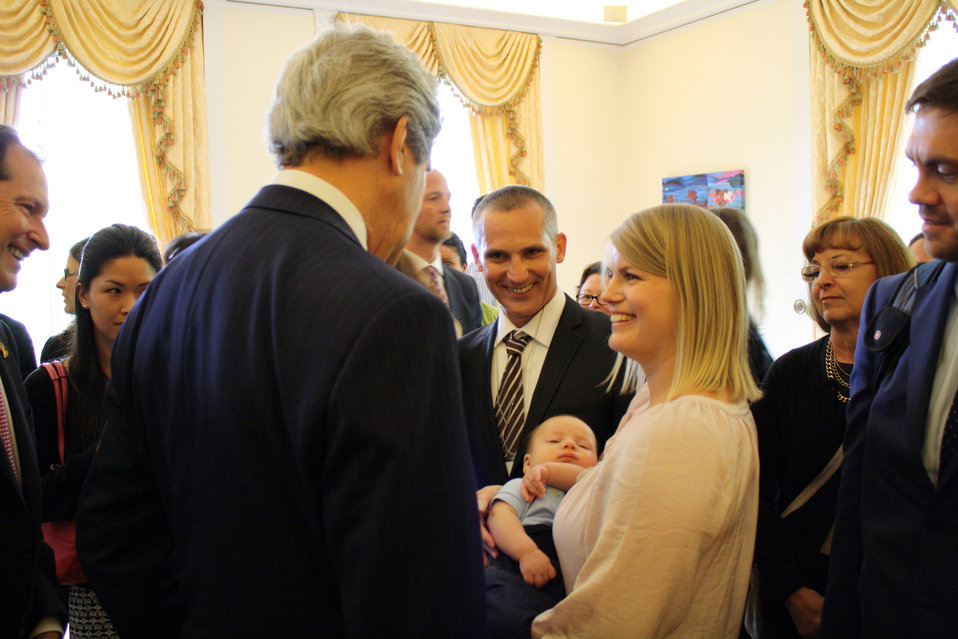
Secretary Kerry Visits U.S. Embassy in Stockholm, Sweden

U.S. Secretary of State John Kerry visits the staff and families of the U.S. Embassy in Stockholm, Sweden, on May 14, 2013.